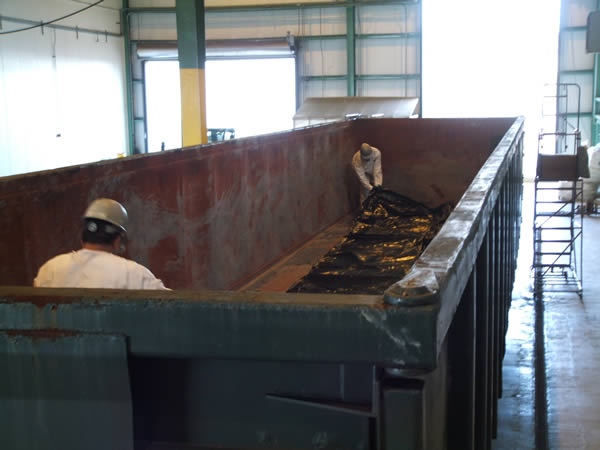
September 2009, Back at the de-watering plant

Work crews carefully line each rail car for the final contaminated material.

The dredged, pumped, filtered and dewatered PCB contamination is taken in these rail cars to a licensed PCB disposal facility in Michigan.